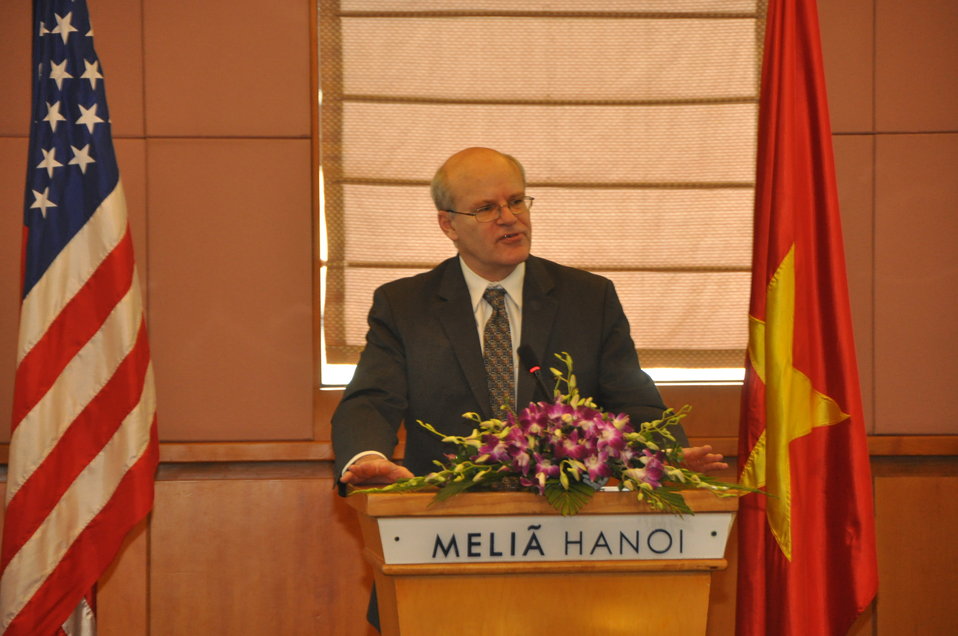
USAID Deputy Administrator Donald Steinberg addresses a workshop on the design for Agent Orange/dioxin clean-up at Danang Airport

USAID Deputy Administrator Donald Steinberg Visits Vietnam: USAID Photo